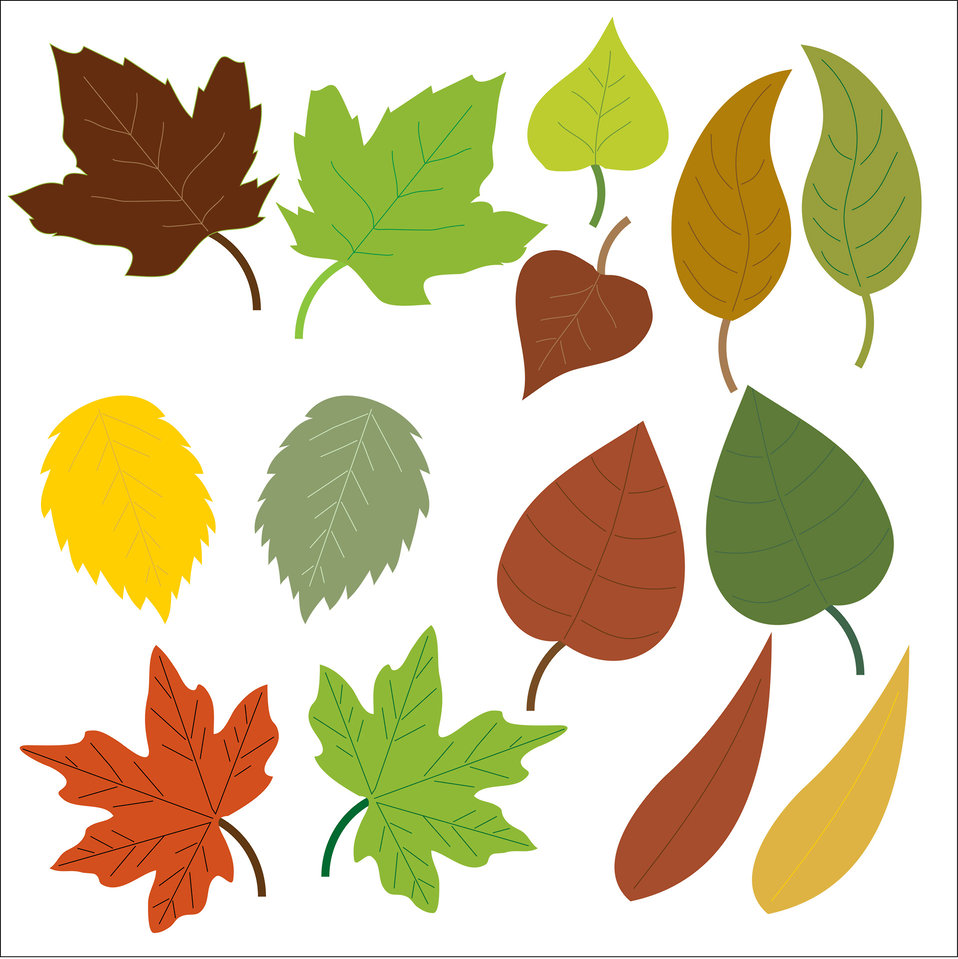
Leaves clipart

Various types of leaf clipart for scrapbooking.